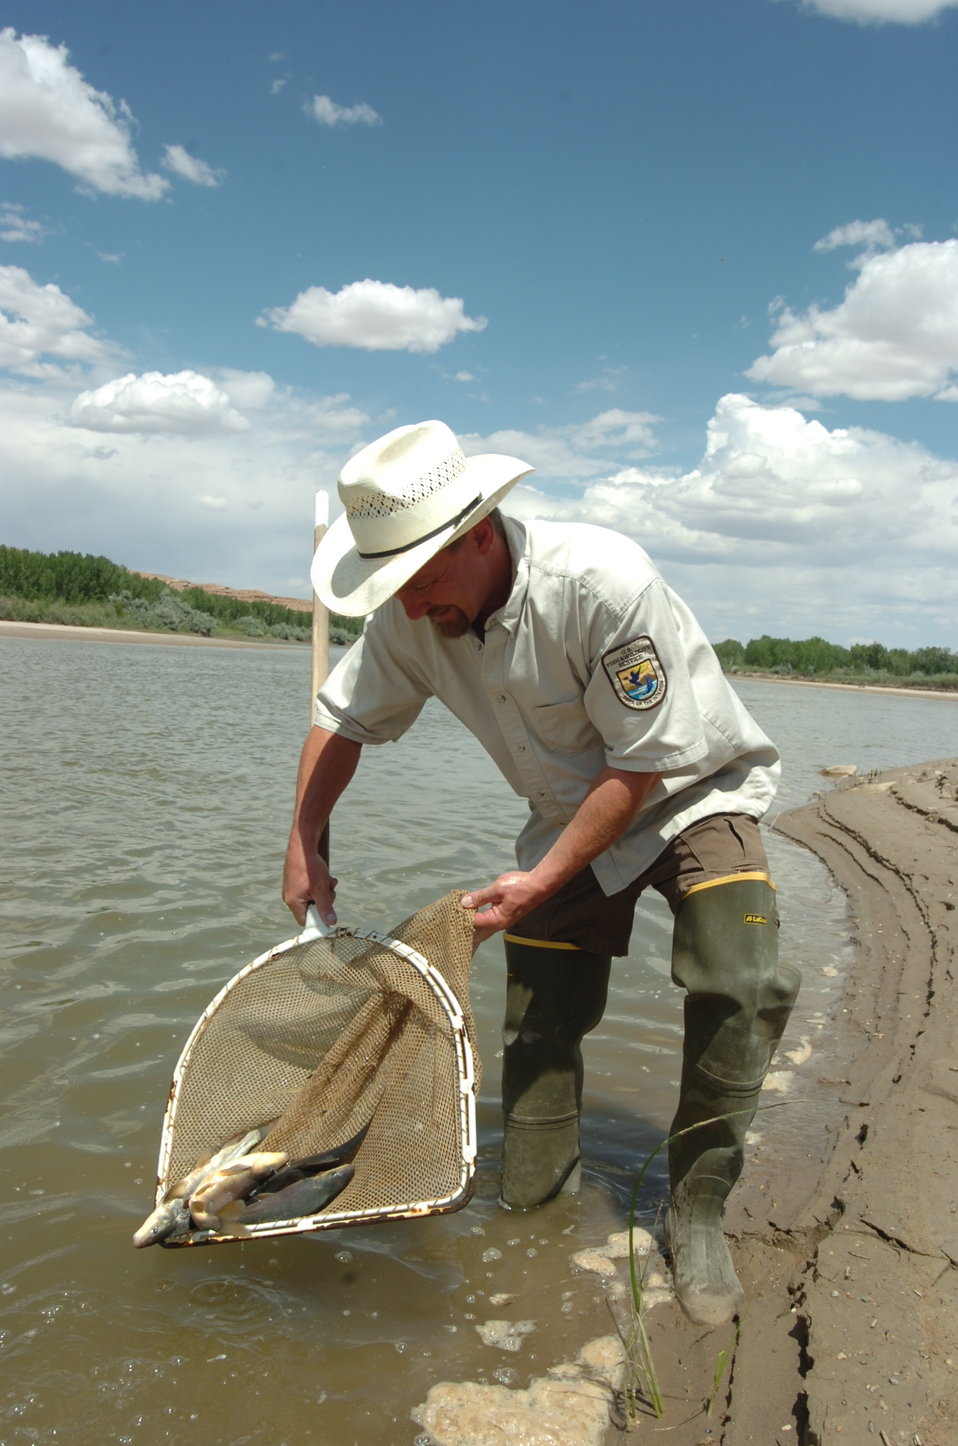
Stocking razorback suckers in the Yampa River

U.S. Fish and Wildlife Service Biologist Mike Montagne stocks hatchery-raised endangered razorback suckers (Xyrauchen texanus) in the Yampa River to help recover the species. These razorback suckers were raised at the Ouray National Fish Hatchery near Vernal, Utah.